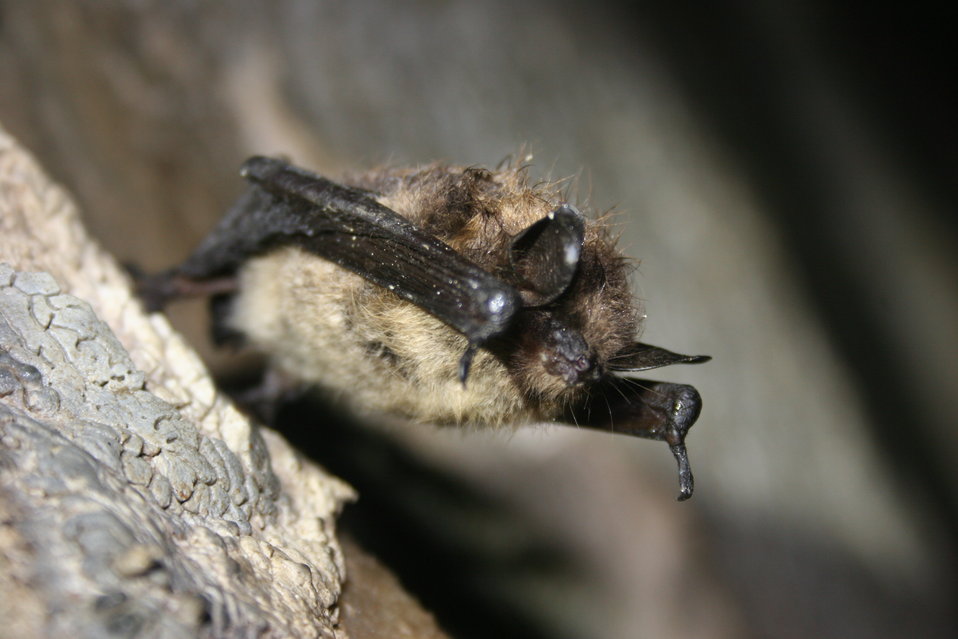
Healthy little brown bat in Mt. Aeolus Cave